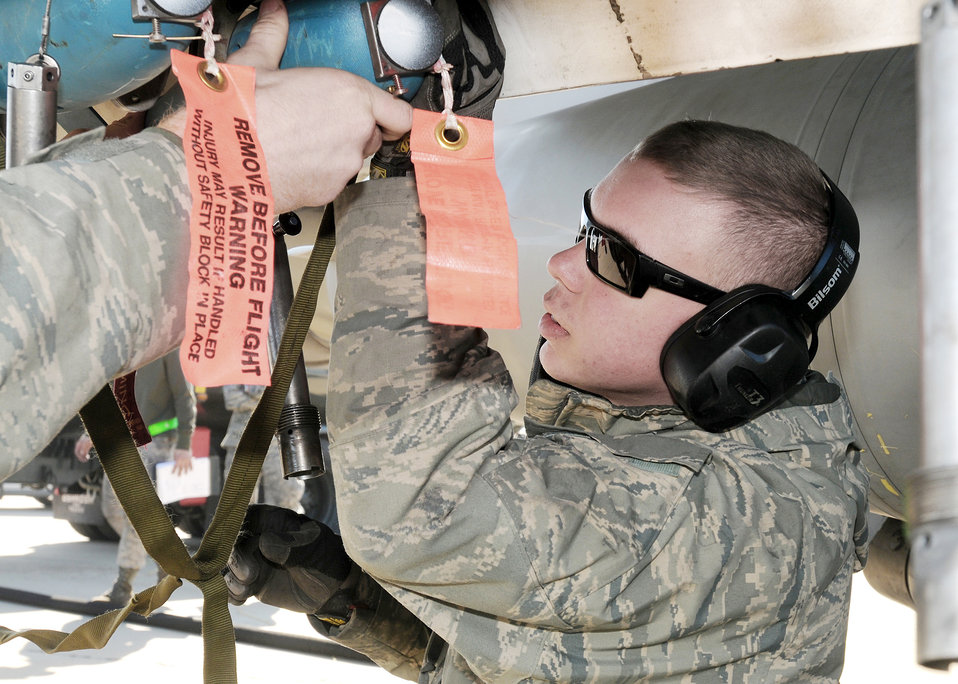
Airmen train in Spain

Airman 1st Class Nicholas Stockbridge loads a BDU-33, a small cast-iron and steel non explosive ordnance that is used in training to simulate actual bombs, on to an F-16 Fighting Falcon Feb. 3, 2010, at Zaragoza Air Base, Spain. During their deployment here, approximately 1,132 BDU-33?s were loaded to F-16?s for training operations. Airman Stockbridge is assigned to the 555th Aircraft Maintenance Unit.